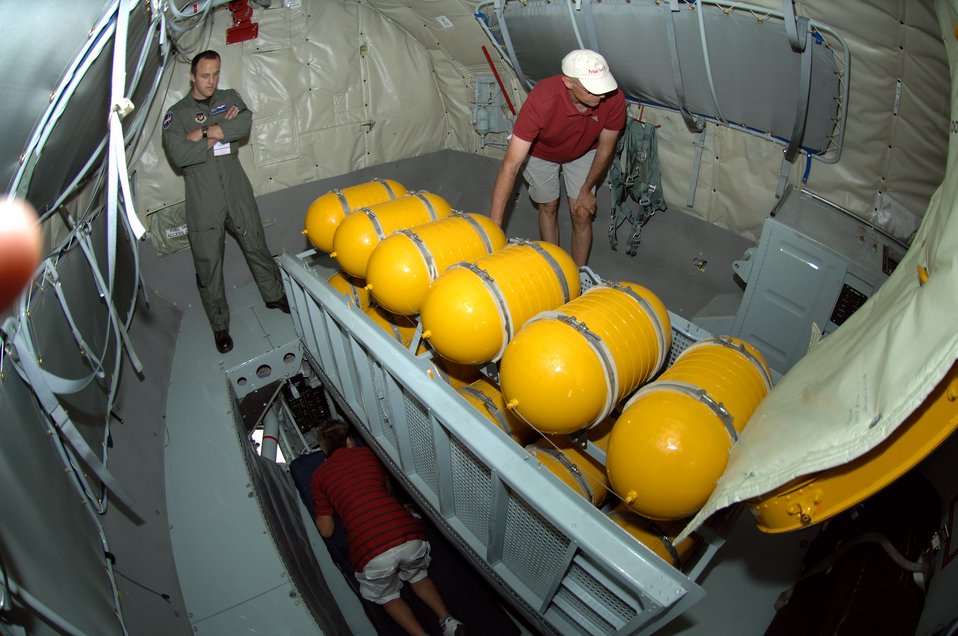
USAFE Airmen beat the heat, manage air show crowd

Airman 1st Class Jon LeMessurier (left) watches air show guests while they tour the boom pod of a KC-135R Stratotanker during the 2008 Berlin Airshow. U.S. participation in the Berlin Airshow enhances the U.S.-German military-to-military relationship, supports security cooperation strategic direction efforts and fosters good relations and better understanding among nations. Airman LeMessurier is a boom operator from the 351st Air Refueling Squadron at Royal Air Force Mildenhall, U.K.